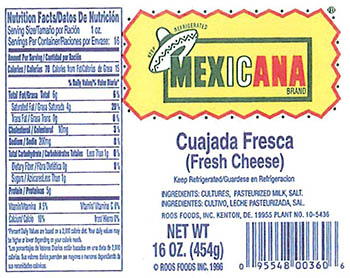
RECALLED – Variety of cheeses

February 23, 2014 – Product Recall – Roos Foods Voluntarily Recalls Variety of Cheeses (listed below) Due to Possible Health Risk.